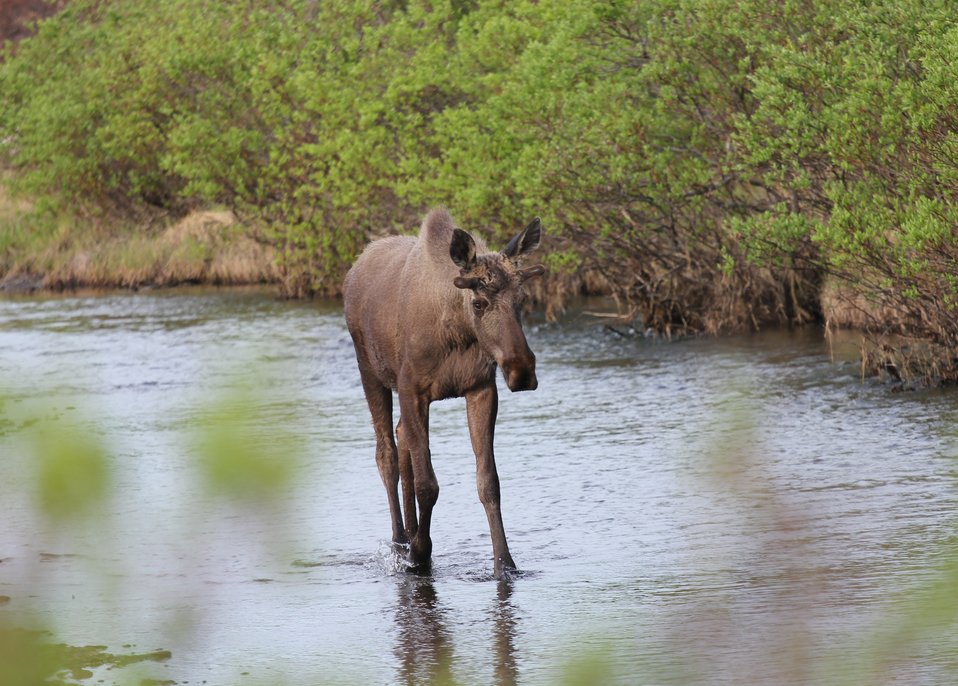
Moose in Allen Creek

Andreafsky Wilderness, Yukon Delta National Wildlife Refuge